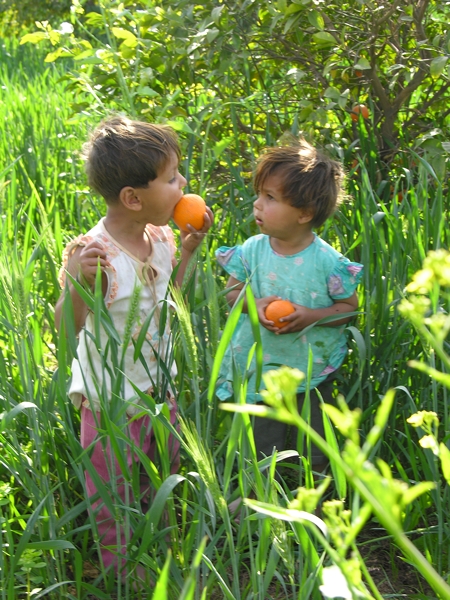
m DSCN4080